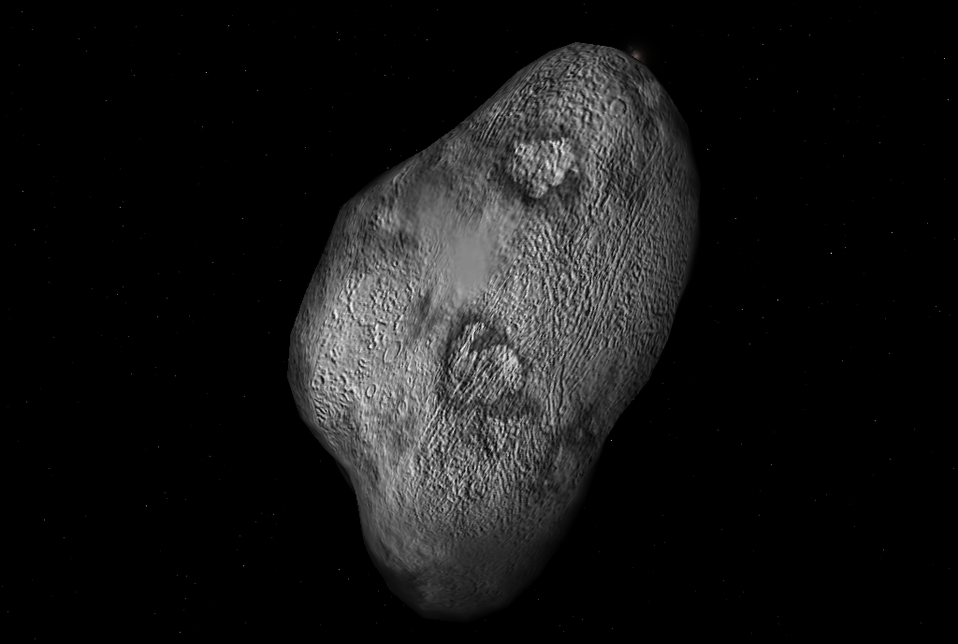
Artist's impression of (19308) 1996 TO66, a cubewano